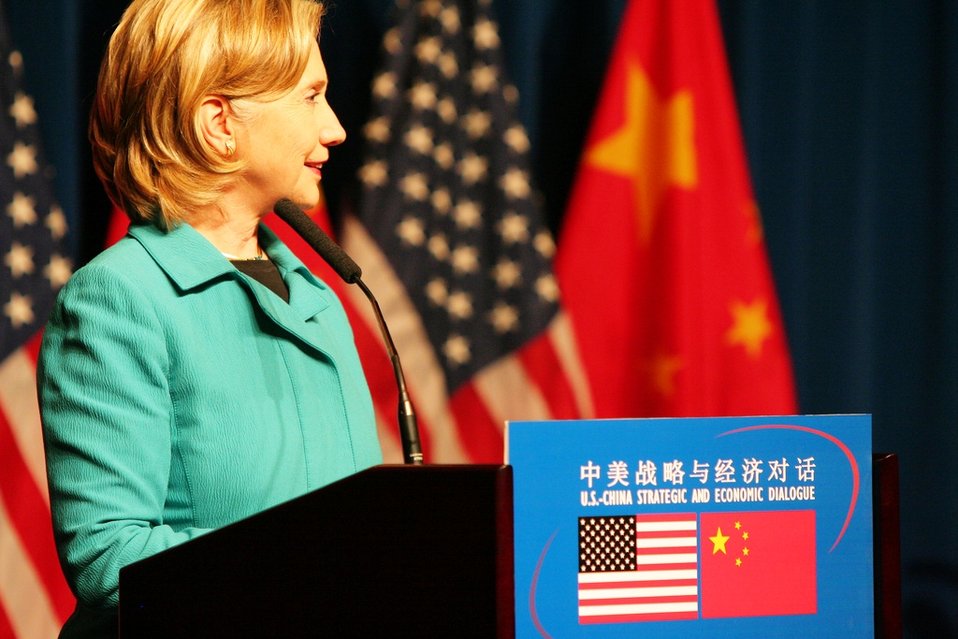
Secretary Clinton Delivers Remarks at Joint Press Availability

U.S. Secretary of State Hillary Rodham Clinton and U.S. Secretary of the Treasury Timothy F. Geithner hold a joint press availability, in Beijing, China, following the conclusion of the U.S.-China Strategic and Economic Dialogue on May 25, 2010.